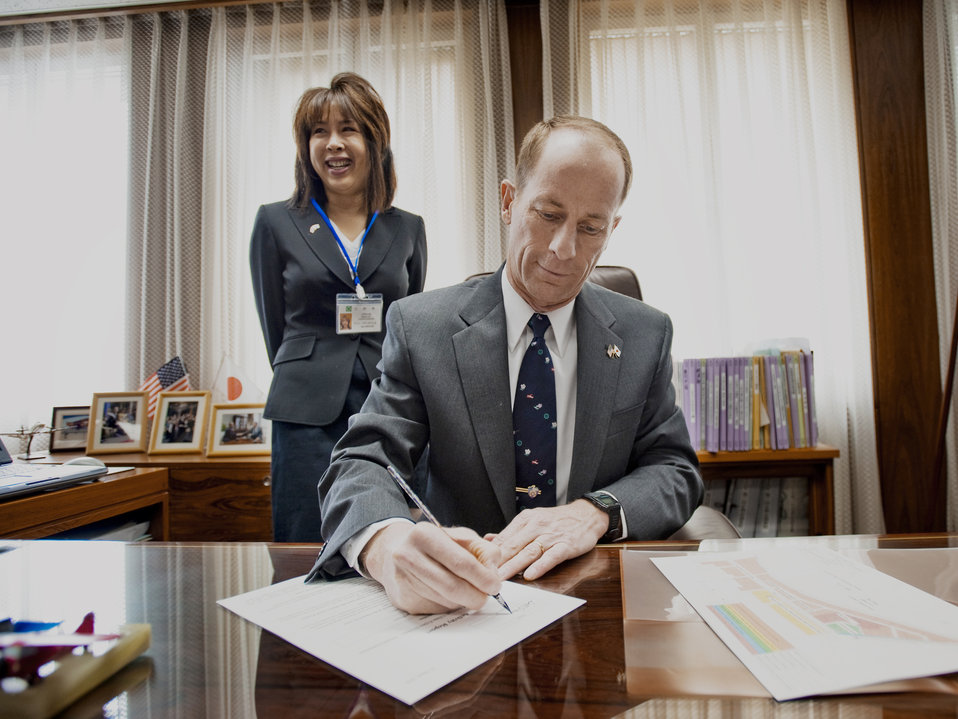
Mayor for a day

Col. David Stilwell, 35th Fighter Wing commander at Misawa Air Base, Japan, serving as honorary Mayor of Misawa City for the day, approves a staff report March 23, 2010, as his wife Jan observes. Through meeting new people and touring Misawa City Hall, Colonel Stilwell was given an opportunity to better understand how members of the city government conduct business.